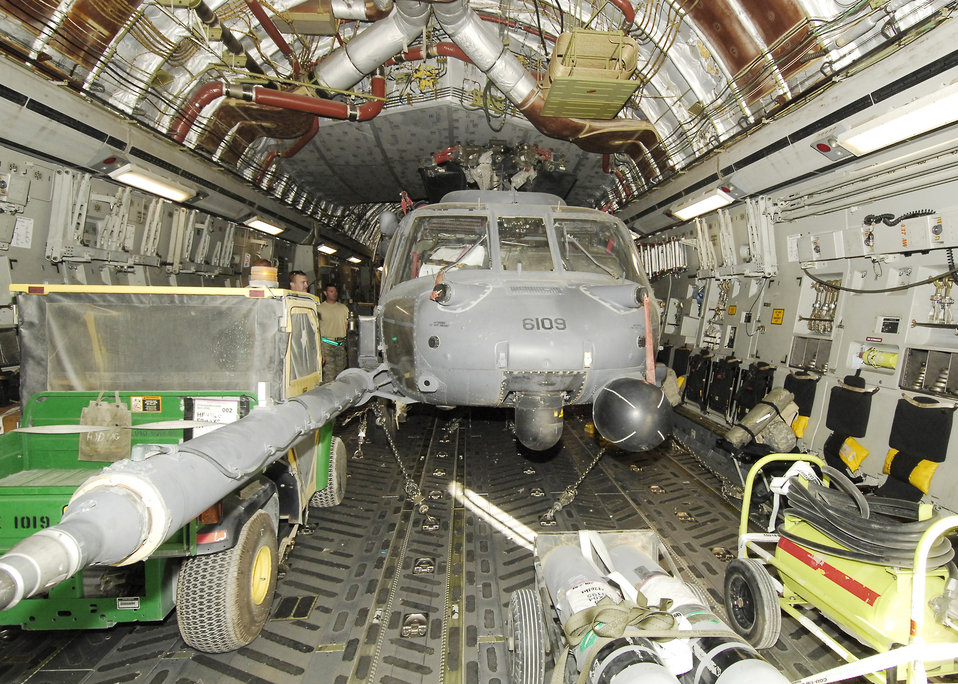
Flying a hawk home

An HH-60G Pave Hawk, secure on the C-17 Globemaster III, waits to take off Sept. 9, 2009, at Bagram Airfield, Afghanistan. The C-17 is transporting the helicopter back to home station for redeployment.